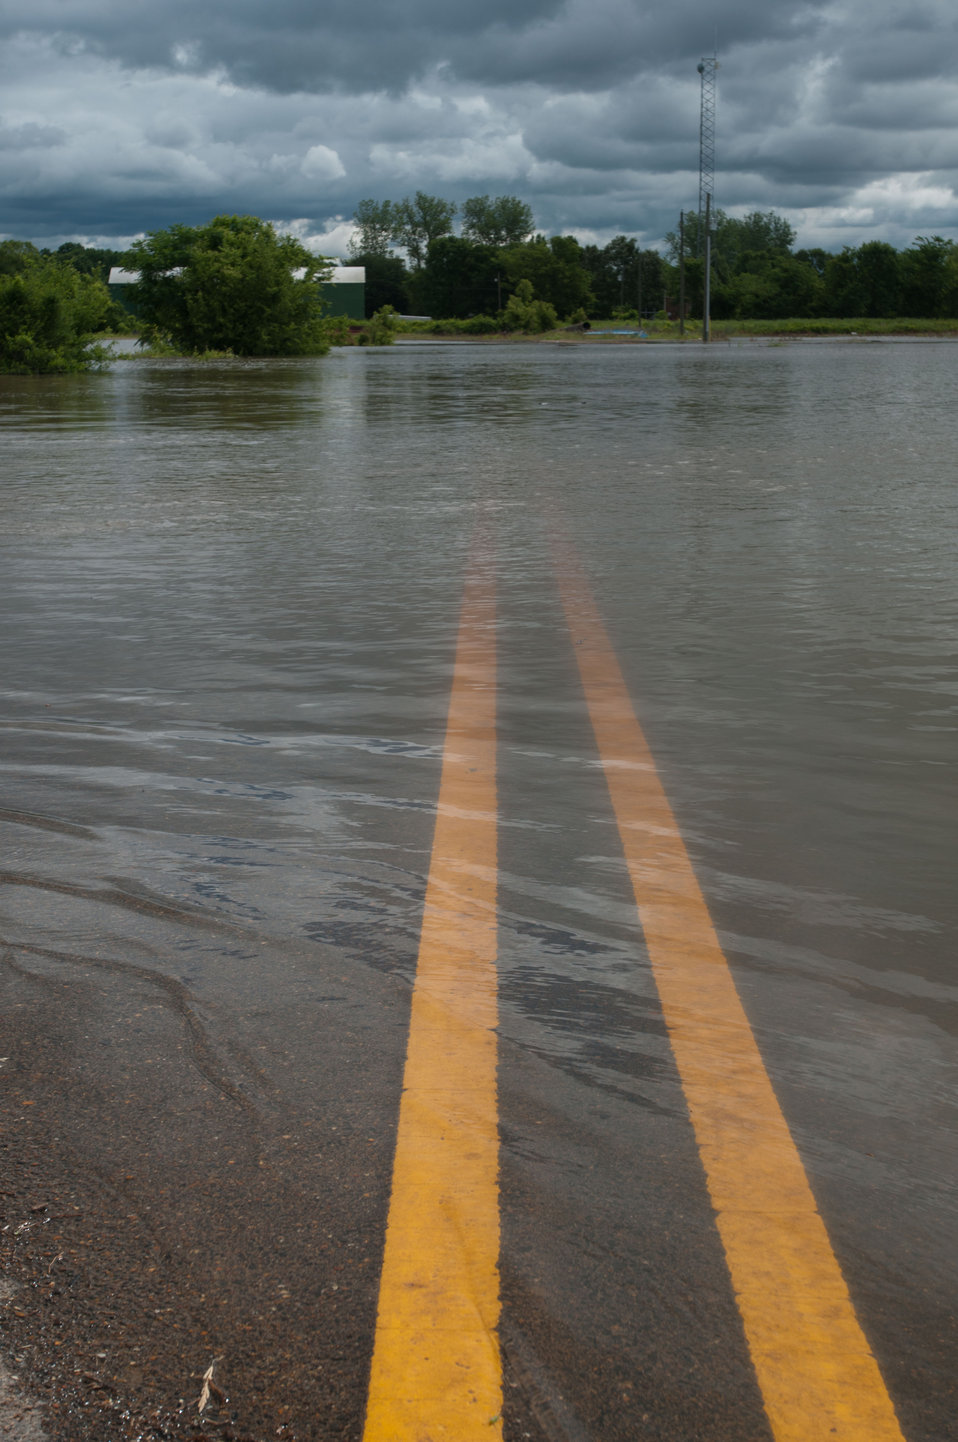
Slowly the water crests the roadways and official have begun to close roads as needed.